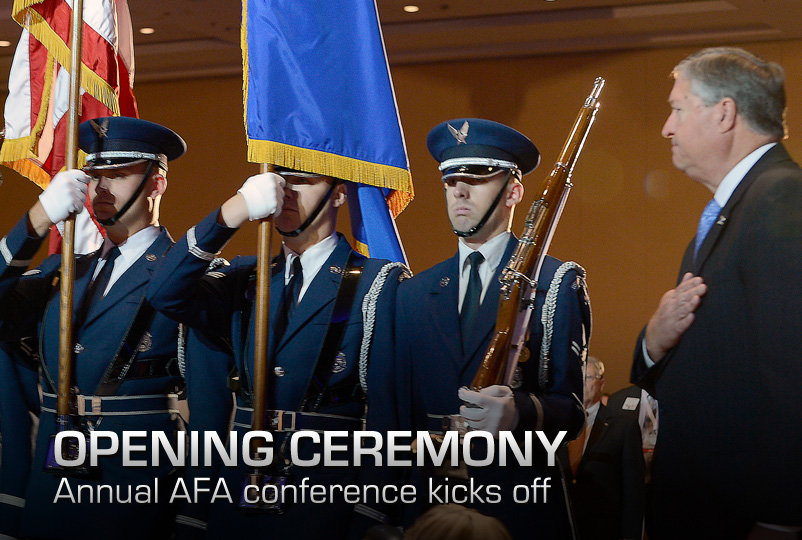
Air Force leaders welcome attendees to annual conference